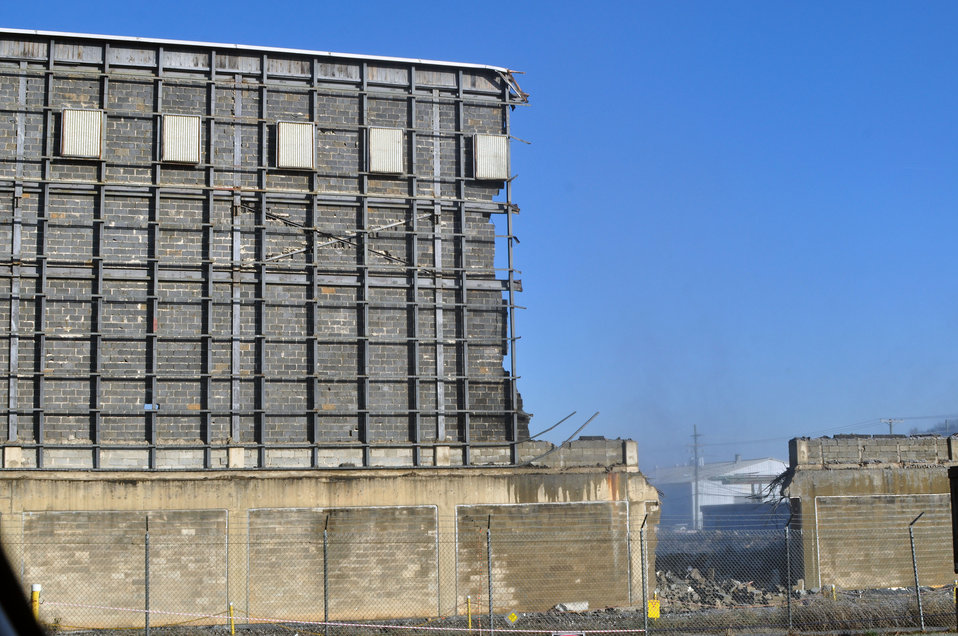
K-25 Demo Oak Ridge 2013

13-152-93 DOE photo Lynn Freeny 12-12-2013 Oak Ridge Tennessee